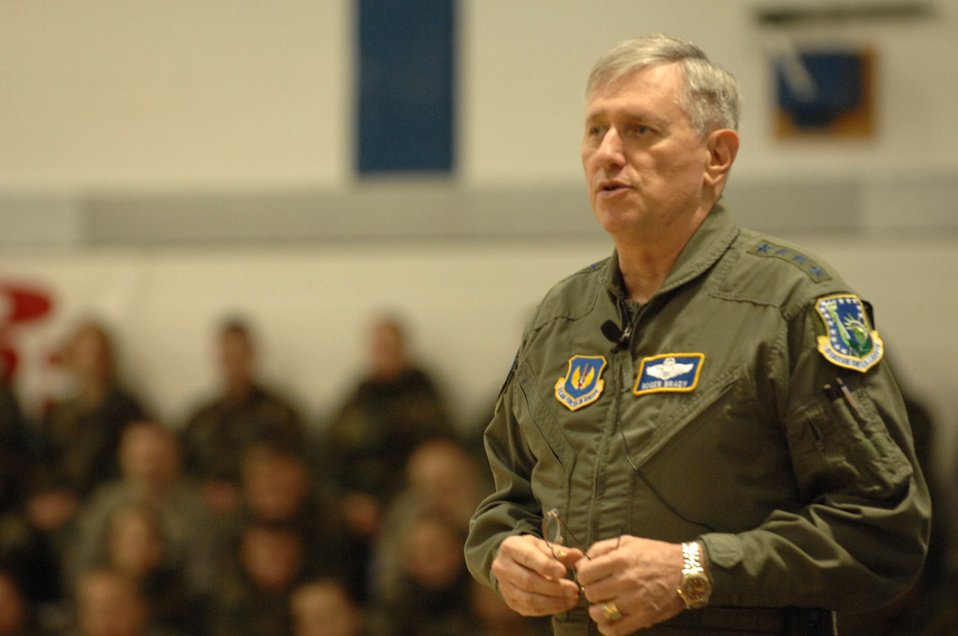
New USAFE commander explains road ahead

Gen. Roger A. Brady speaks to Airmen Feb. 1 at Royal Air Force Lakenheath, England. During his first visit to England as the U.S. Air Forces in Europe commander, General Brady gave Airmen a thumbnail view of how USAFE and RAF Lakenheath fit into the Air Force mission.